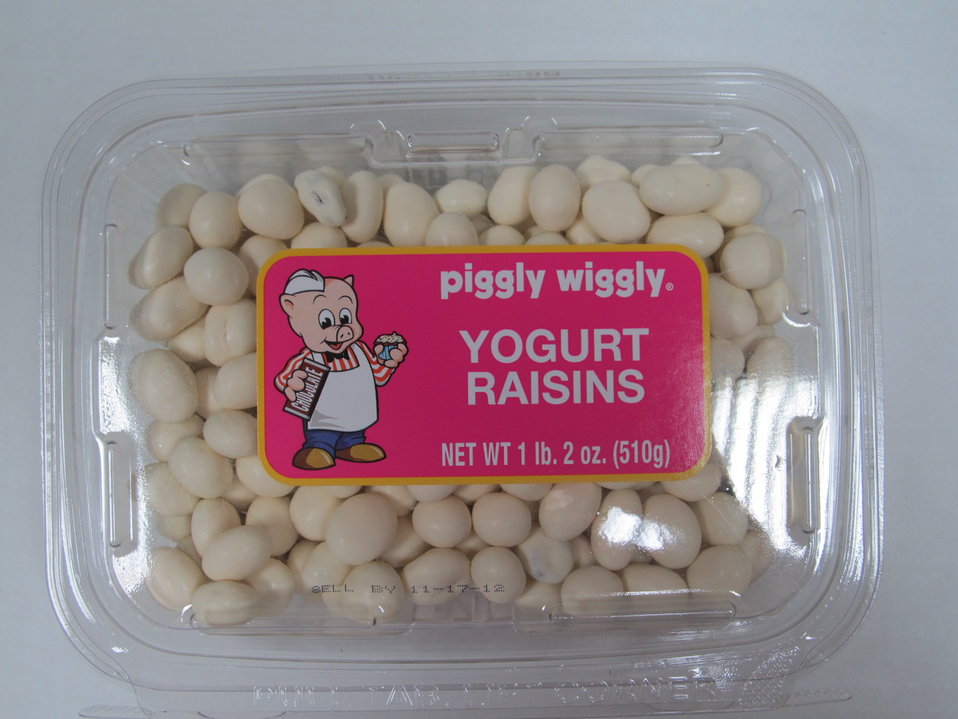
RECALLED - Yogurt Raisins and Granola Mix

December 22, 2011 - Eillien's Candies, Inc. Issues a Voluntary Recall of Select Candy Items Due to Possible Health Risk.